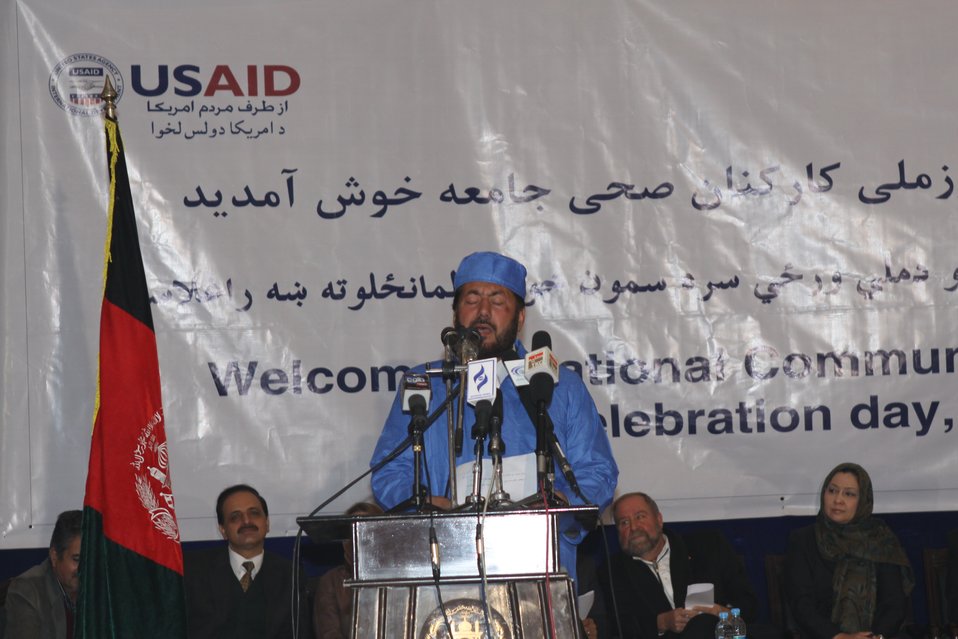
Community Health Workers Celebrated

Kabul, Afghanistan | December 5, 2010 — In support of the United Nations designated International Volunteer Day for Economic and Social Development, Afghanistan’s Ministry of Public Health celebrated its annual Community Health Worker Day today. Acting Minister of Public Health Dr. Suraya Dalil, USAID Senior Deputy Mission Director Robert Hellyer, other government officials, and international donors joined in recognizing the critical contribution of community health workers in Afghanistan and encouraging them to continue their voluntary support to their communities.
The event praised the contributions of the more than 22,000 volunteers throughout the country who deliver community level health-education, counseling, and services out of village health posts located in private homes. The Ministry of Public Health envisioned that community-based healthcare programs will actively encourage communities and families to adopt healthy lifestyles and behaviors, and provide families access to high quality and socially acceptable preventative medicine and life-saving services.
“We have 22,000 community health workers in Afghanistan that are able to implement the basic and standard medicines. They all have been trained through a job description,” said Minister Dalil. Addressing the health workers, she added, “I am proud and feel powerful that I have people like you.”
USAID-funded health projects collaborate closely with the Ministry of Public Health to improve the health and nutritional status of Afghans, provide quality primary healthcare, and promote healthy behaviors at the community and household-levels. USAID supported the training of more than 9,000 of the volunteer community health workers currently working in Afghanistan.
“On behalf of the American people, I congratulate the Community Health Workers for their diligence to gain the skills and knowledge necessary to serve their communities in this important role,” said USAID Senior Deputy Mission Director Hellyer. “USAID strongly supports community based health care and believes that quality community-based health services are essential to reaching Afghanistan’s Millennium Development Goals.”
To support the Basic Package of Health Services, USAID assisted in developing the community health worker training manual, helped train community health worker supervisors and master-trainers, facilitated in-service training, and produced and developed reporting tools, job aids, and education materials.